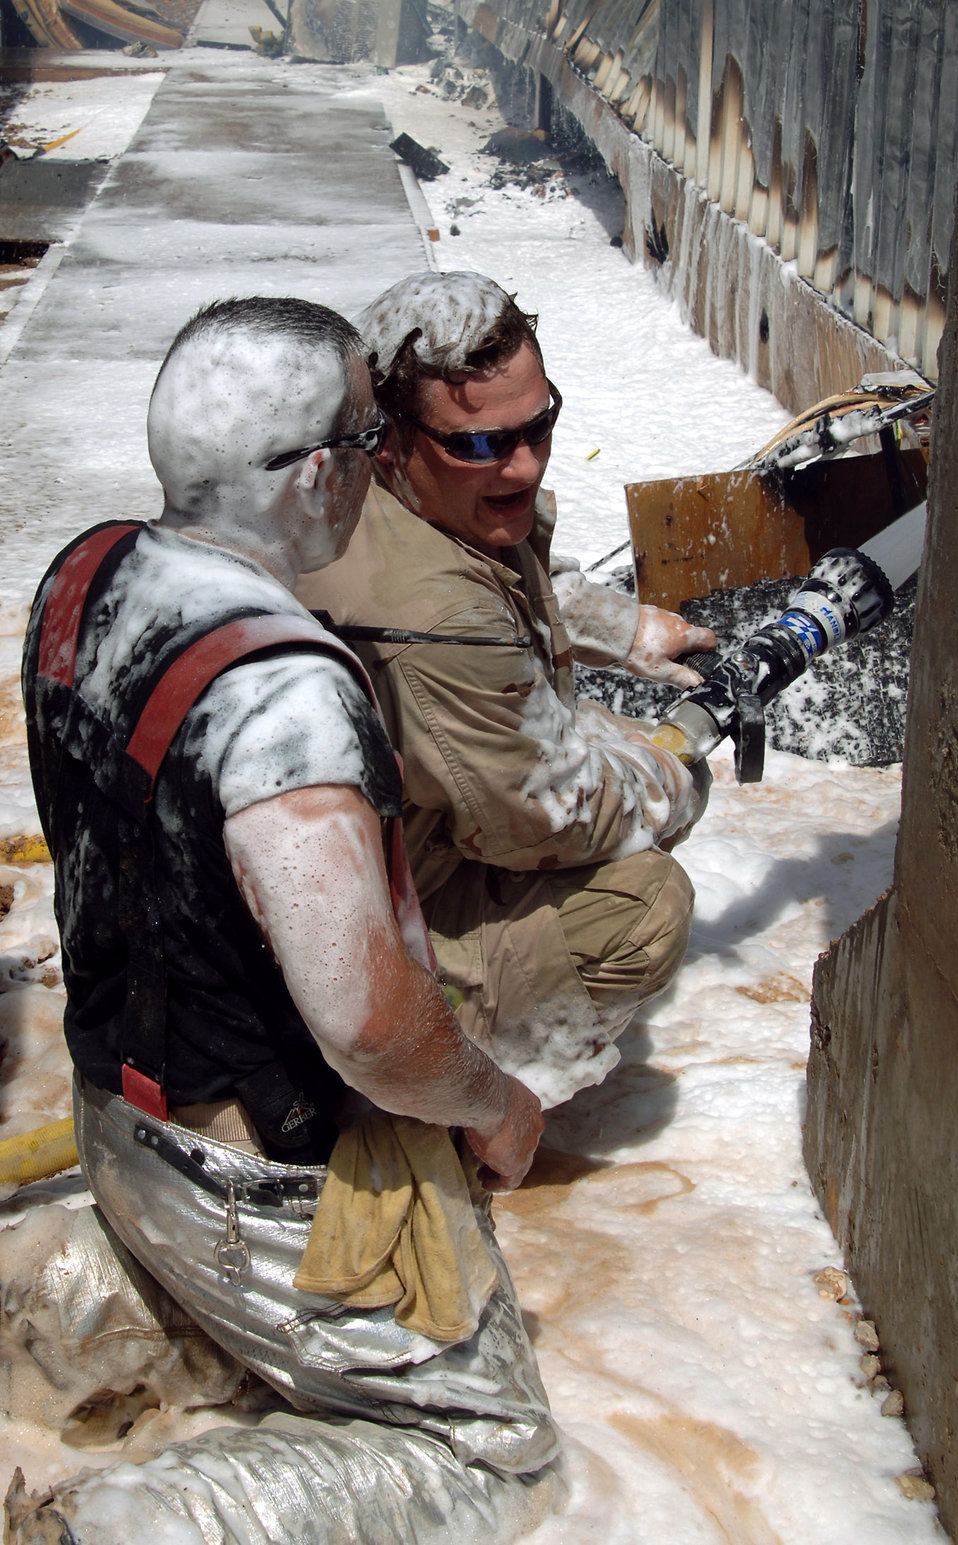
AF, Army firefighters contain 2-alarm blaze

Staff Sgt. Andres Steevens and Jimmie Gazay work to contain a fire July 22 at Joint Base Balad, Iraq. Air Force and Army firefighters extinguished the two-alarm fire, limiting the damage to six closely situated buildings. No one was injured in the fire, although three firefighters were treated for heat stress-related conditions and released. Sergeant Steevens, a firefighter with the Joint Base Balad Fire Department, is deployed from Misawa Air Base, Japan. Mr. Gazay is a volunteer firefighter who assisted with the Balad Fire Department's response.